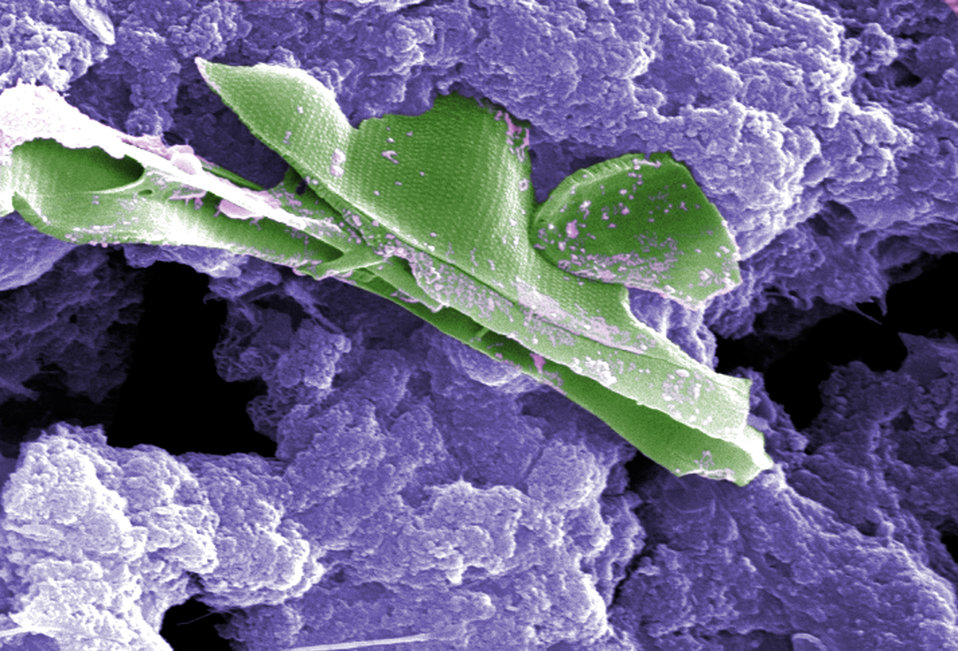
This digitally-colorized scanning electron micrograph (SEM) of an untreated water specimen extracted from a wild stream mainly used to control flooding during inclement weather, revealed the presence of unidentified organisms, which included bacteria, protozoa, and algae. In this particular image, unidentified sheets of algae were wrapped in a mass of what appeared to be a mucoid amorphous biofilm.